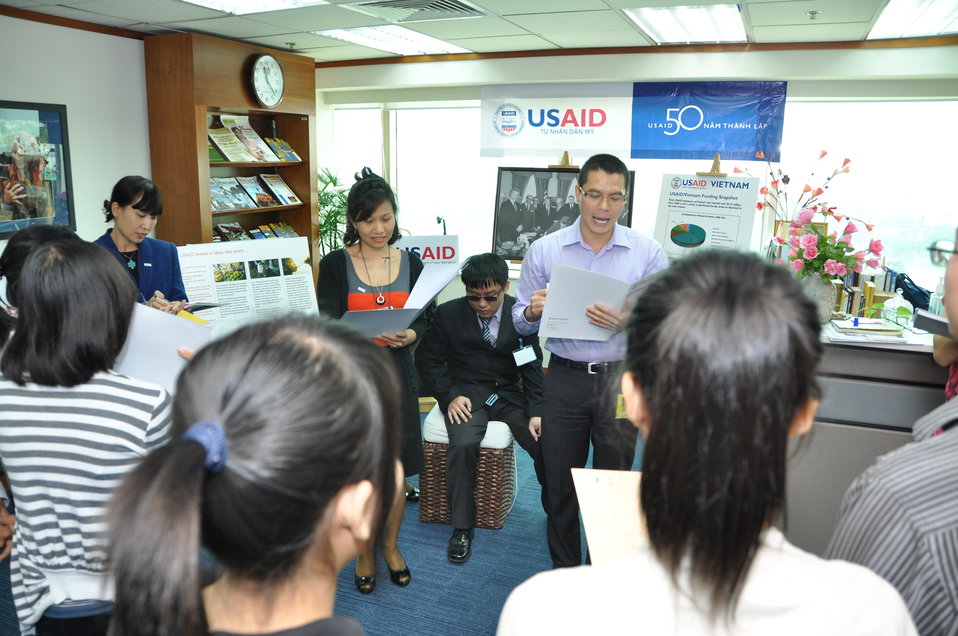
USAID Vietnam Open House 50th Anniversary, Hanoi